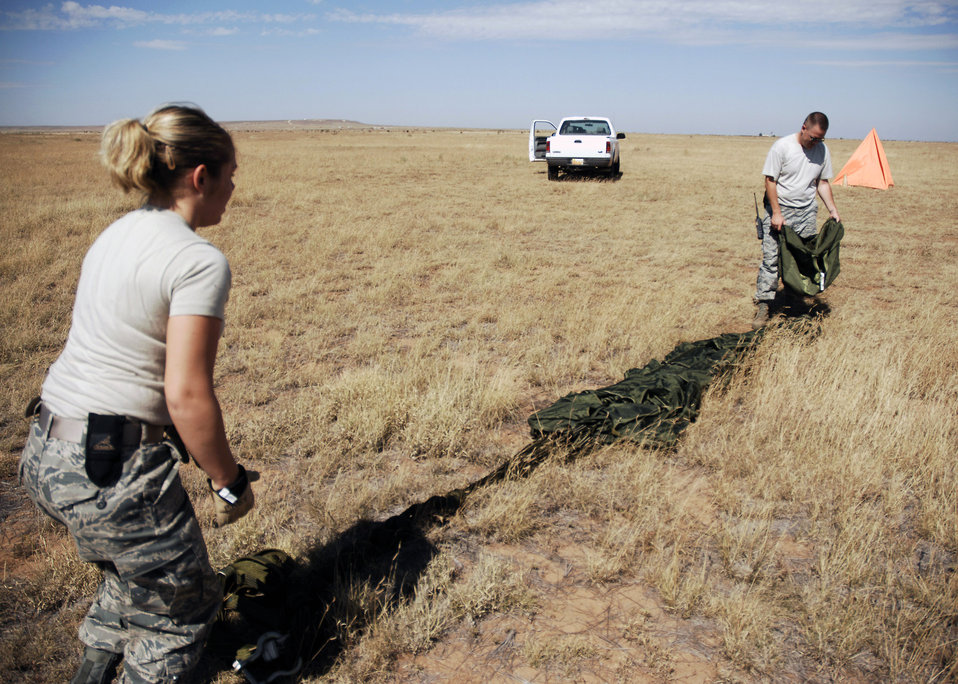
Cannon Airmen train for special operations forces resupply

Senior Airman Helen Eberly and Staff Sgt. Jerimy Pickering recover a parachute at the Melrose Air Force Range, N.M., during an exercise Sept. 23. Airmen pack, inspect, and recover the loads that are used for airdrop training. Airman Eberly and Sergeant Pickering are assigned to the 27th Special Operations Logistics Readiness Squadron.